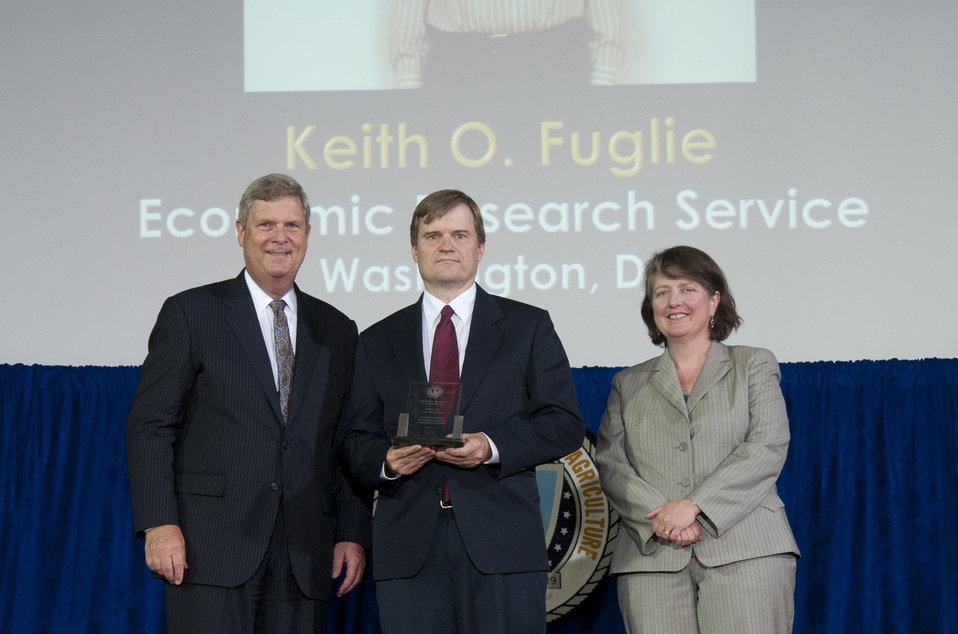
Agriculture Secretary Tom Vilsack and Agriculture Deputy Secretary Kathleen Merrigan present the Secretary’s Honor Award for Personal and Professional Excellence to Economic Research Service employee Keith O. Fuglie at the U.S. Department of Agriculture (USDA) 64th Annual Honor Awards Ceremony in Washington, D.C. on Wednesday, Sept. 12, 2012. Fuglie lead the research in agricultural science policy and productivity, resulting in new global assessments of the role of public and private research in contributing to agricultural productivity.